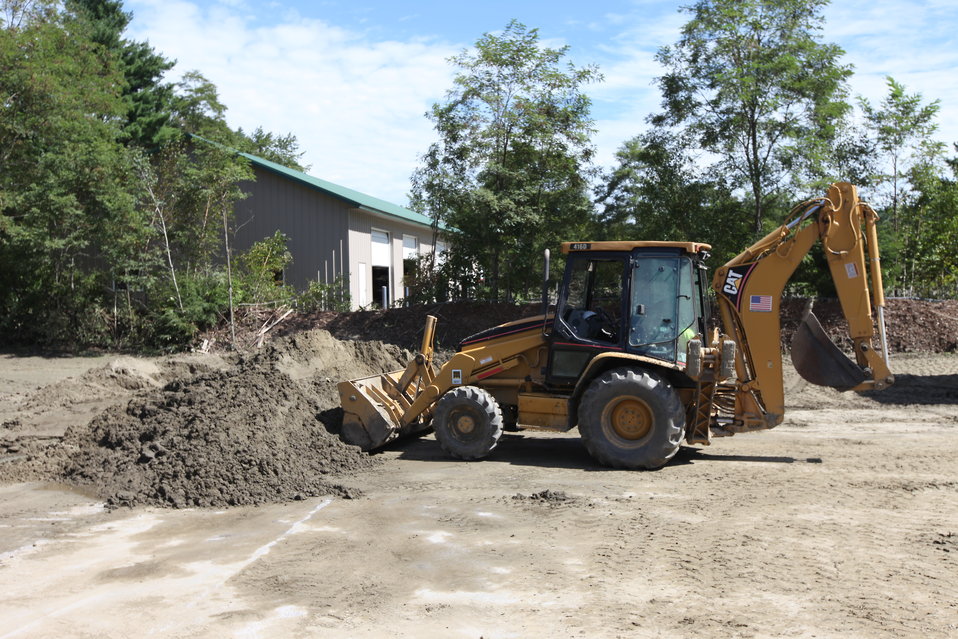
Storm damage relief at White River NFH

Clean-up of mud and silt deposited during the flood.